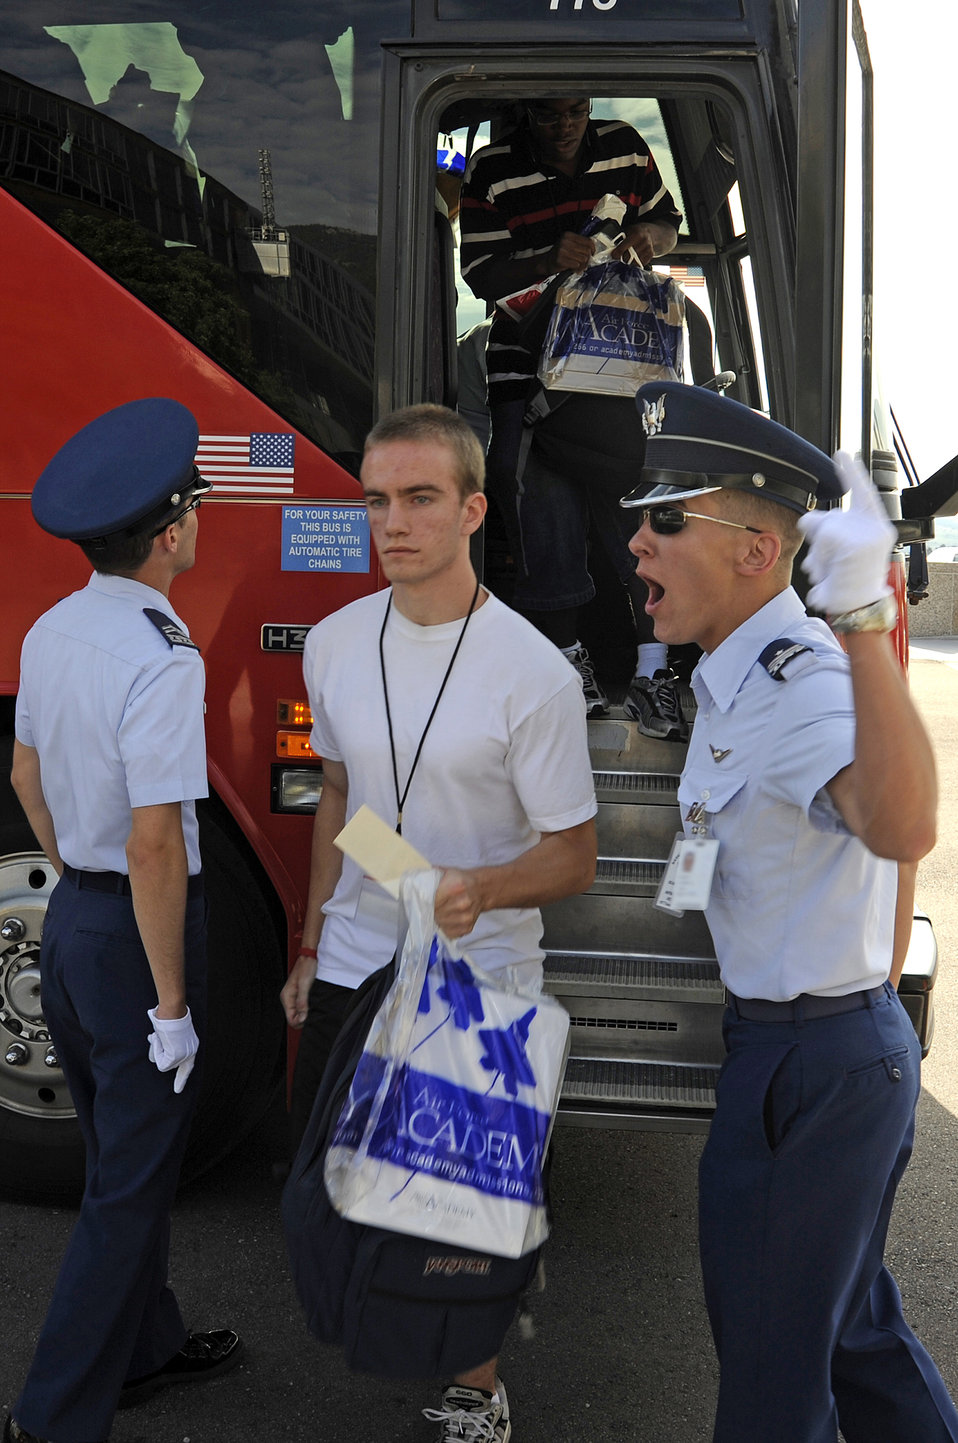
Academy Class of 2013 learns basics

Cadet cadre shout,